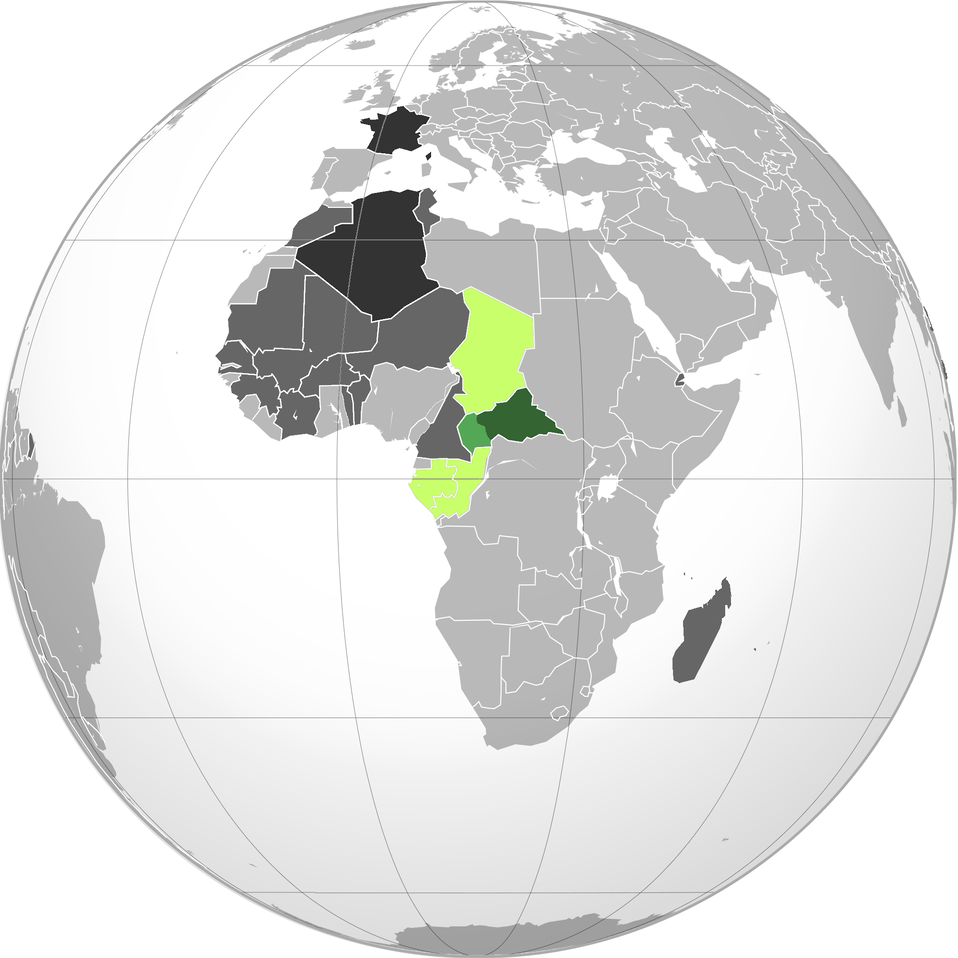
Green: Ubangi-Shari (prior to 1916)
Lighter green: Ubangi-Shari (1916-1960)
Lime green: French Equatorial Africa
Dark gray: Other French possessions
Darkest gray: French Republic